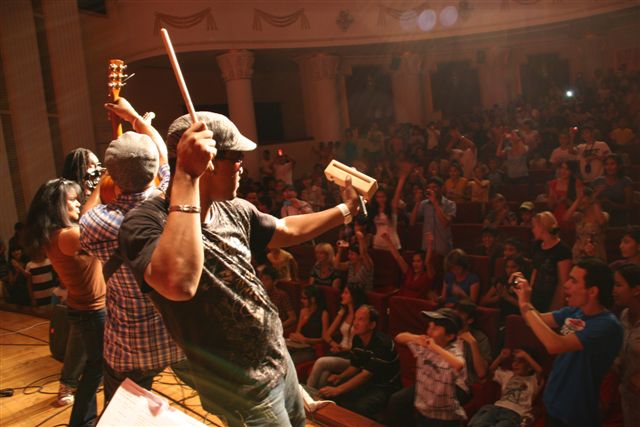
Fans cheer as the Melvin Williams Group performs in Turkmenabat, Turkmenistan, on June 22, 2011. The Melvin Williams Group is visiting Turkmenistan from June 21-26, 2011, as part of the U.S. Embassy’s annual American Culture Days celebration.